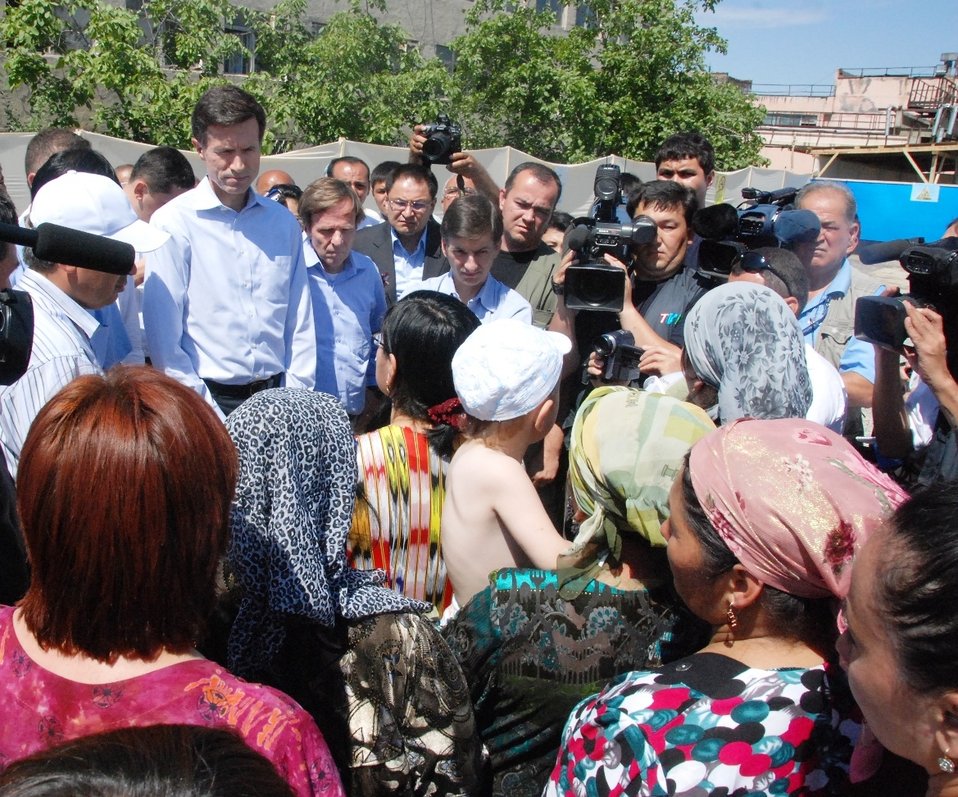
Assistant Secretary Blake Speaks With Refugees in Uzbekistan

U.S. Assistant Secretary of State for South and Central Asian Affairs Robert O. Blake speaks with refugees near Andijan, Uzbekistan, a city in Uzbekistan's densely populated Ferghana Valley near the Kyrgyz border, on June 18, 2010.